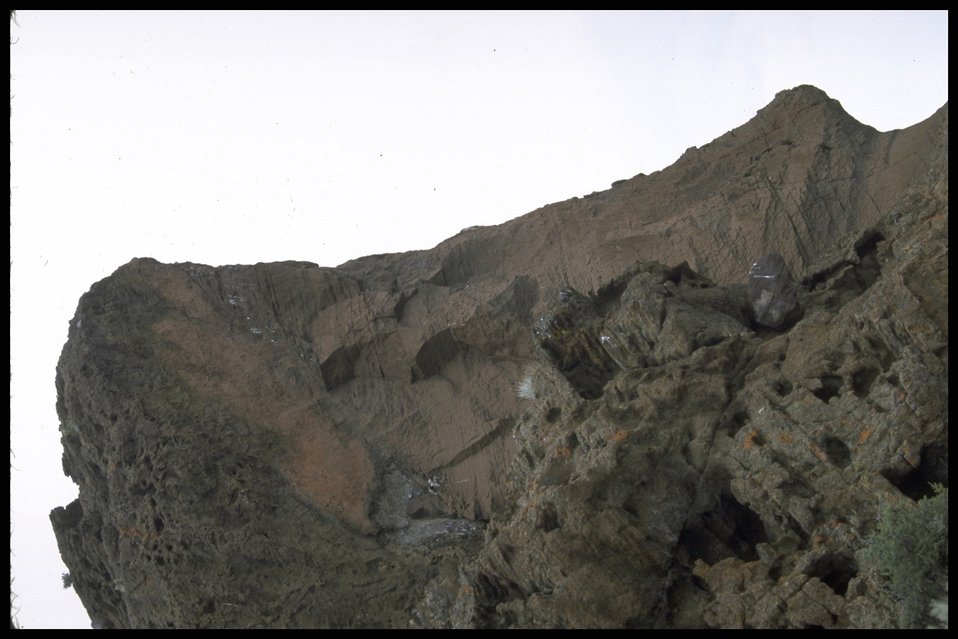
Scenic view, Ft. Rock, Lakeview District.